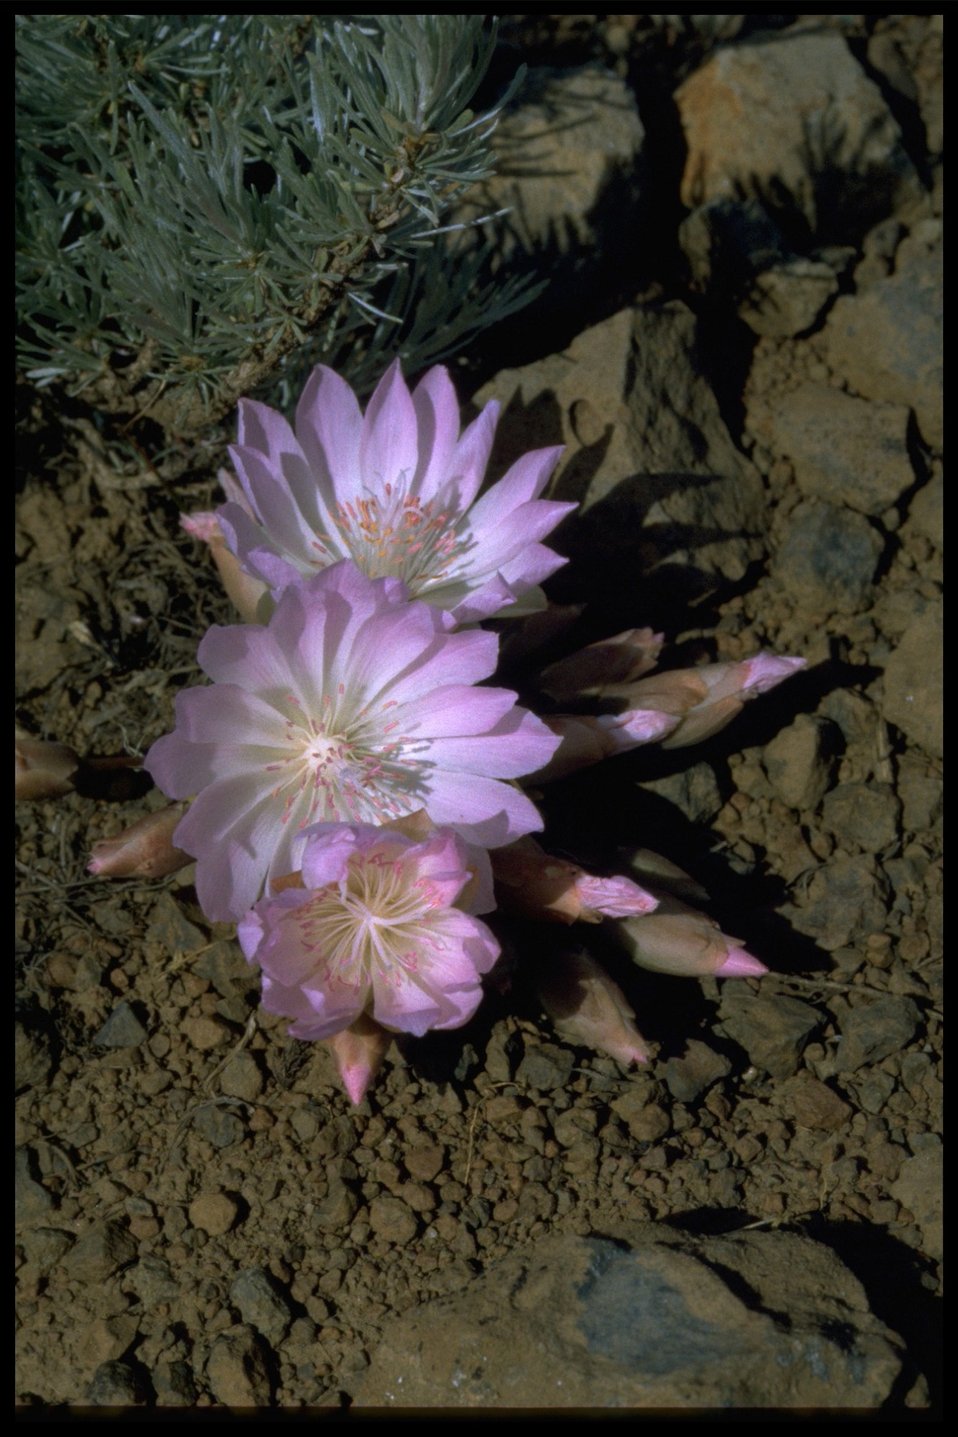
Closeup of Bitterroot wildflowers and buds